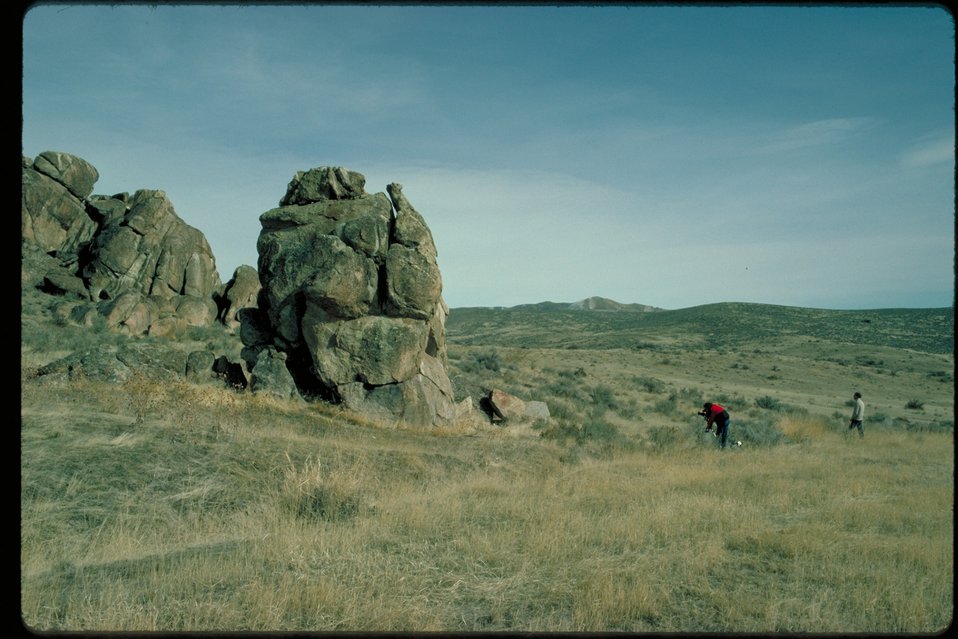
Oregon Trail Near Ditto Creek Lower Snake River District